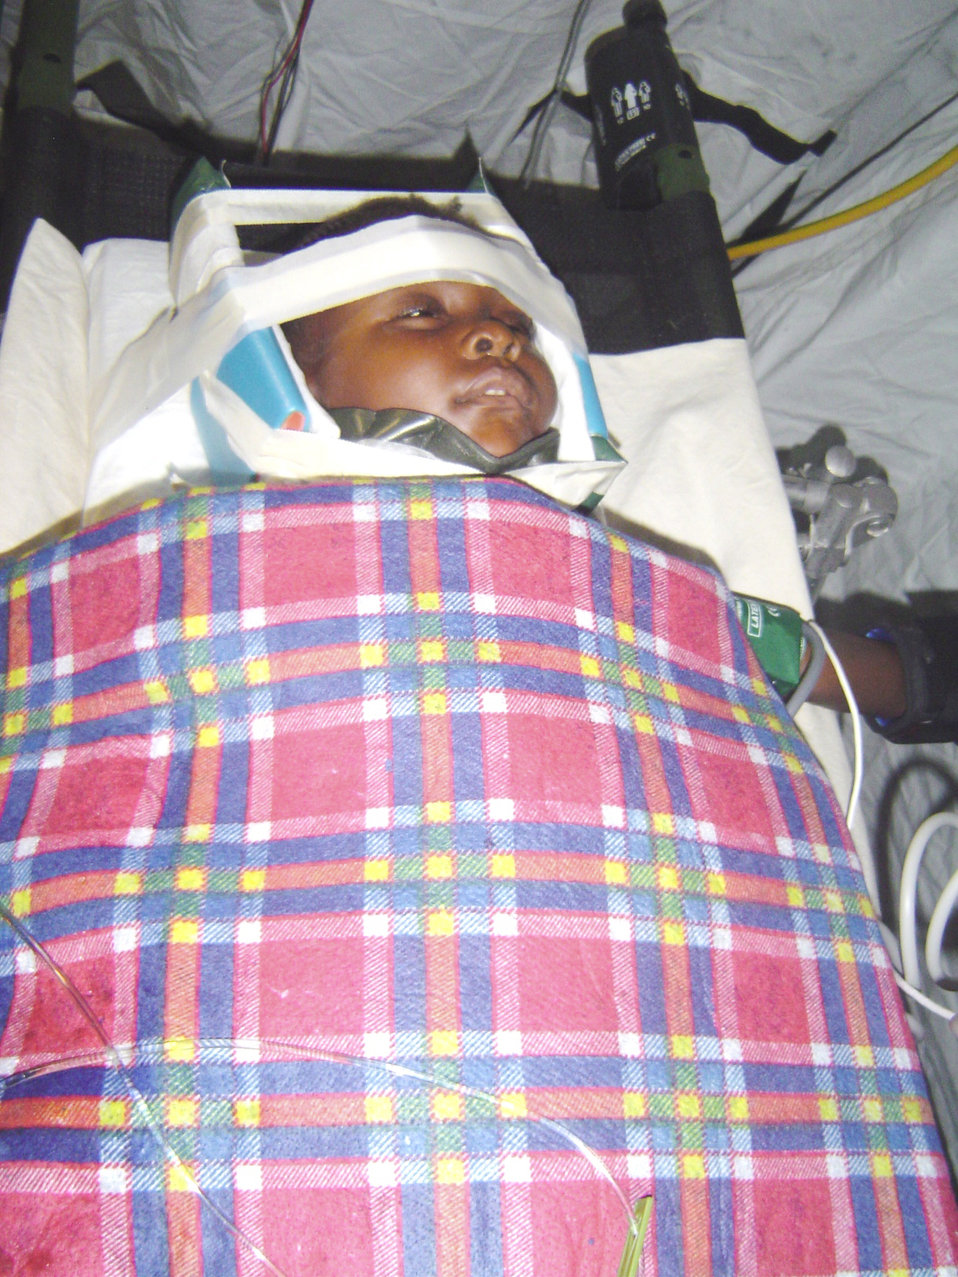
Keesler medical teams aid Haiti relief efforts

A 4-year-old girl with a cervical fracture and spinal cord injury had her neck immobilized by a critical care air transport team from Keesler Air Force Base, Miss., during a C-130 Hercules flight from Haiti to a medical facility in Florida Feb. 7, 2010. Keesler AFB CCAT teams are providing medical care to victims of the Haiti earthquake who are airlifted to hospitals in the United States. Stephen Boskovich)